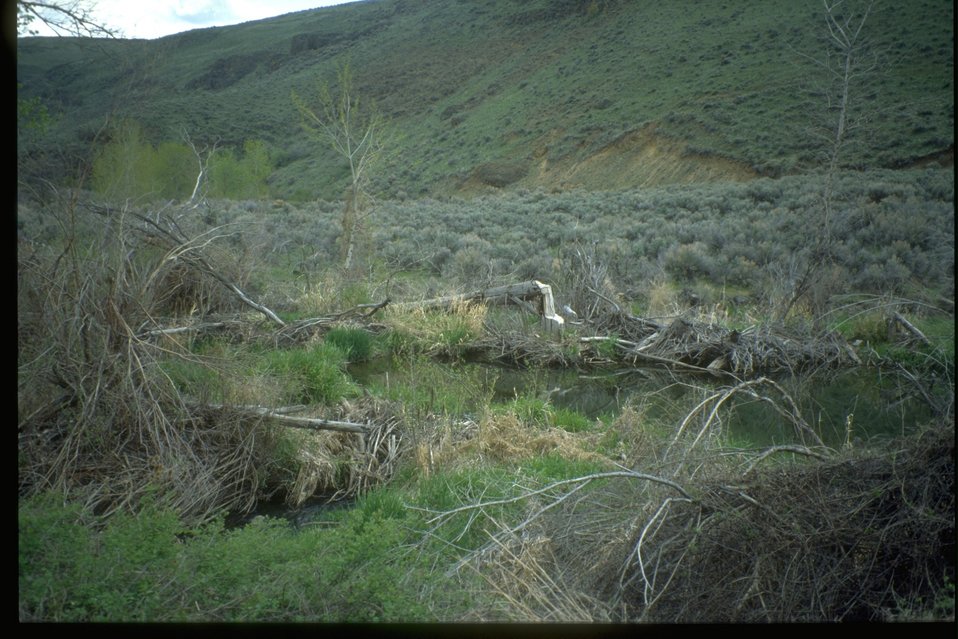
Beaver dam in Douglas County, WA.